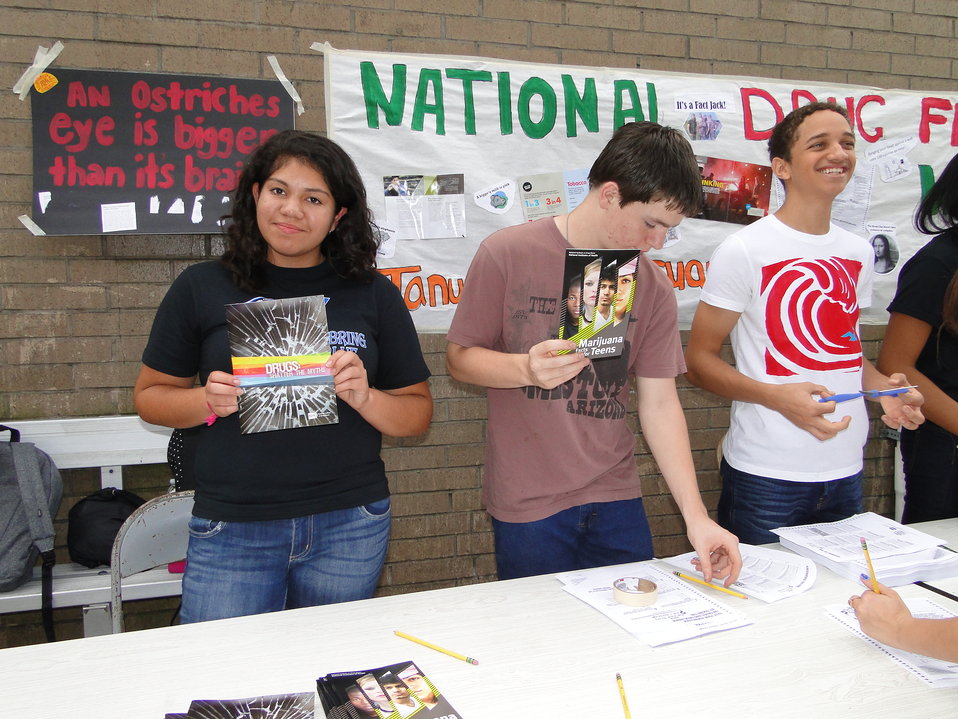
Sebring High School